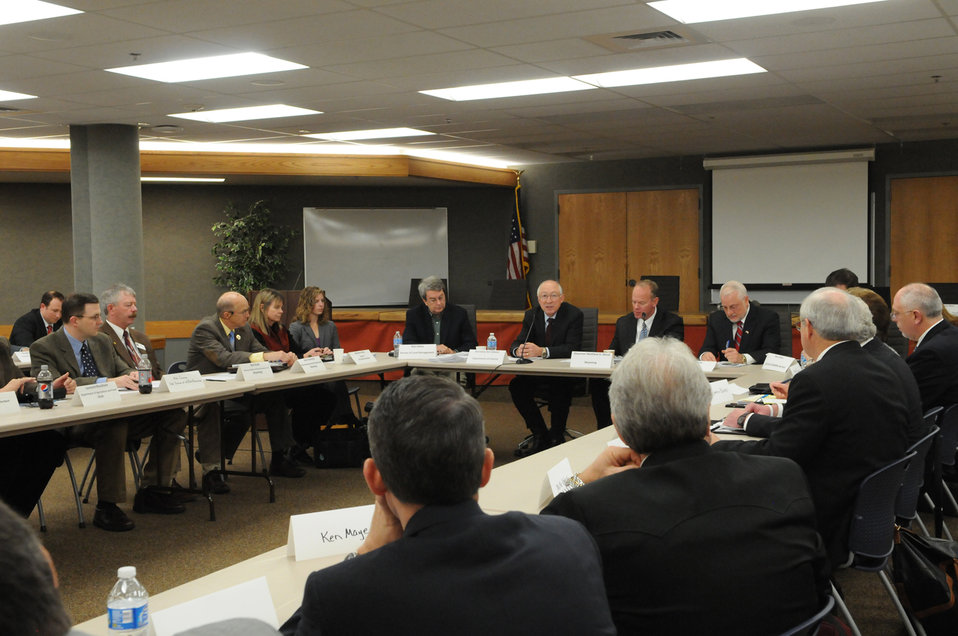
Wyoming - Sage Grouse Meeting

Secretary Salazar and Dan Ashe Attended a Sage Grouse Meeting in Wyoming